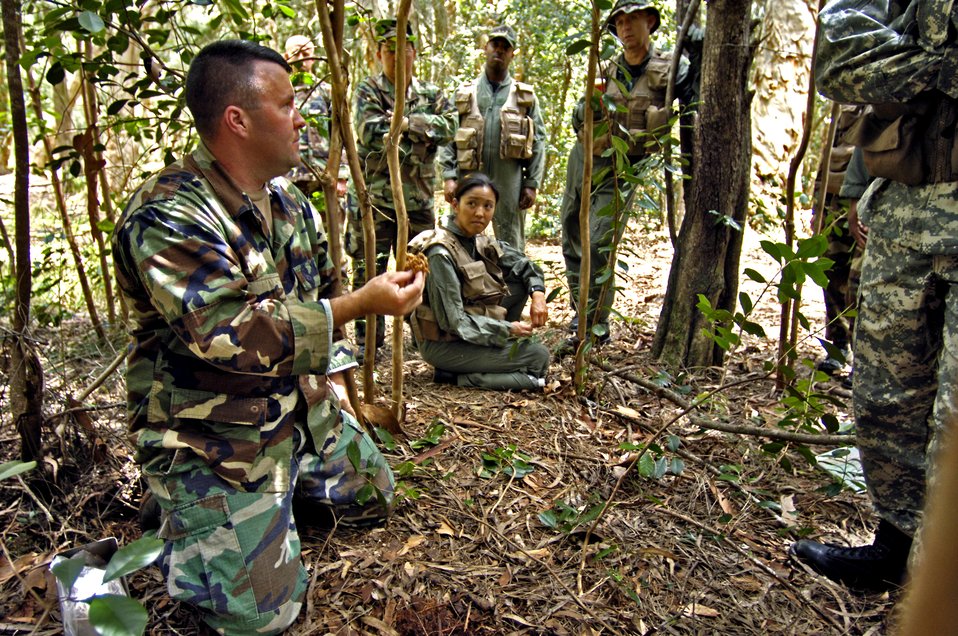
Career fields meld expertise in recovery missions

Staff Sgt. Christopher Ferguson explains how to prepare tinder to start a fire during a ground survival refresher course May 4 at Hawaii's Schofield Barracks training area. The course provides hands-on realistic training for aircrew members that concentrates on the principles, techniques and skills necessary to survive in any environment and return home. Sergeant Ferguson is a survival, evasion resistance and escape instructor.